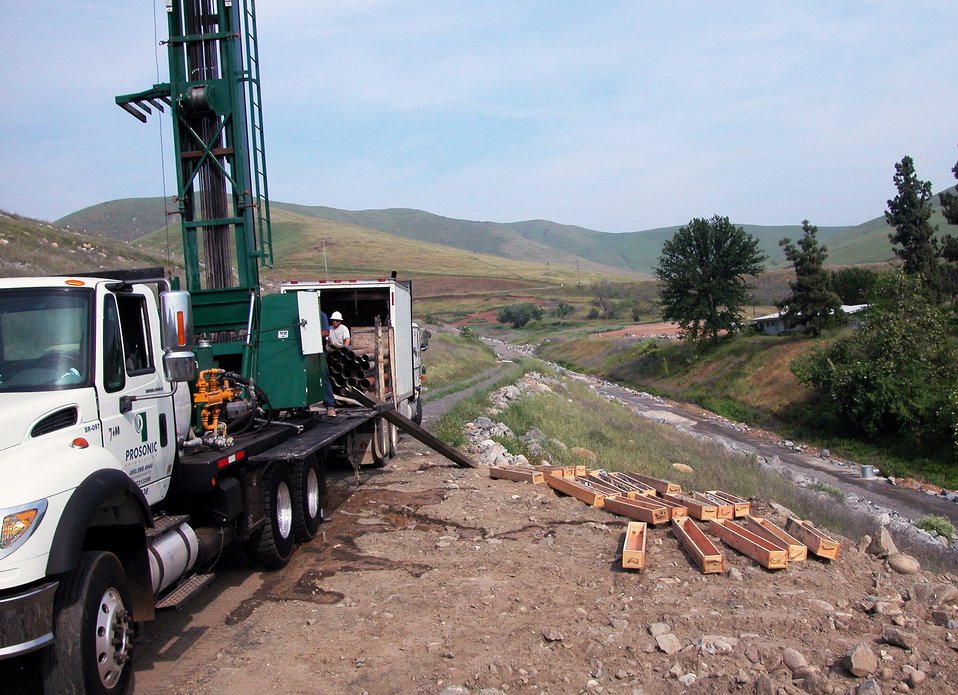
Corps drills borehole test sites at Success Dam

Contractors with the U.S. Army Corps of Engineers Sacramento District use a sonic drill rig to dig borehole test sites May 1, 2006, at Success Dam near Porterville, Calif. The boreholes are used to evaluate the earthen structure and stability of soil and rock underneath the dam during the Corps’ Success Dam Safety Modification Study.